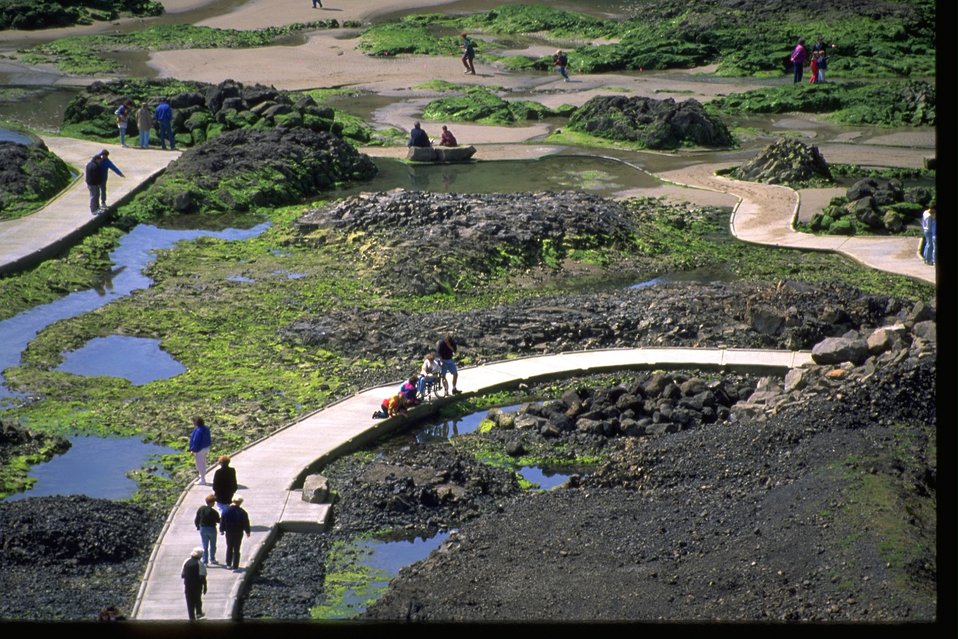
Programs at Yaquina Head Outstanding National Area accessible tidepools.